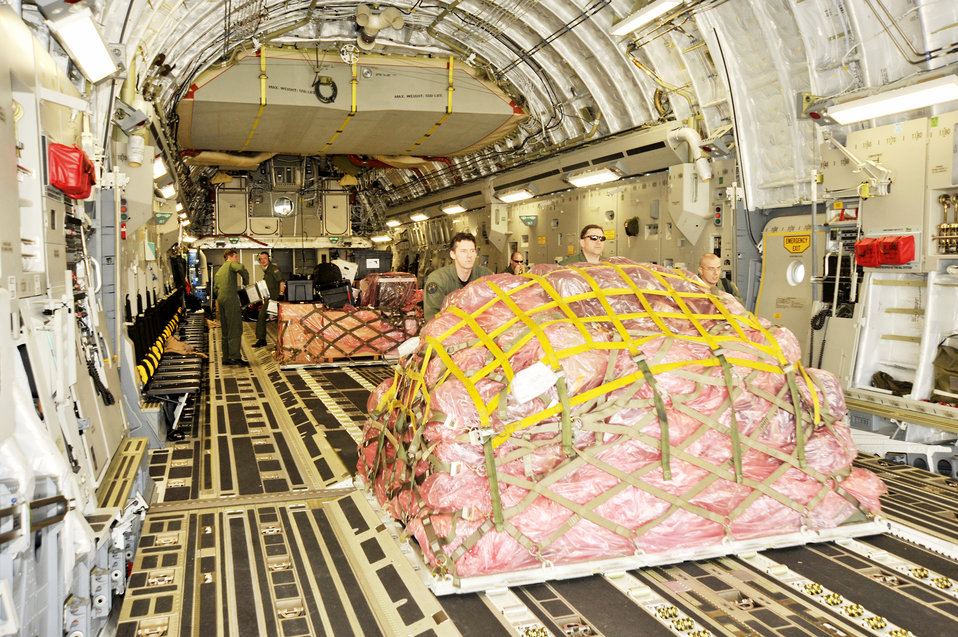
Multinational wing completes first mission into Iraq

Airmen from the multinational Heavy Airlift Wing based at Papa Air Base, Hungary, unload a C-17 Globemaster III at Baghdad International Airport, Iraq. The airlift into Iraq was a first by the wing and facilitated the deployment for members of the NATO Training Mission-Iraq. The wing operates three C-17s and includes NATO member nations Bulgaria, Estonia, Hungary, Lithuania, the Netherlands, Norway, Poland, Romania, Slovenia and the U.S., as well as Partnership for Peace nations Finland and Sweden.